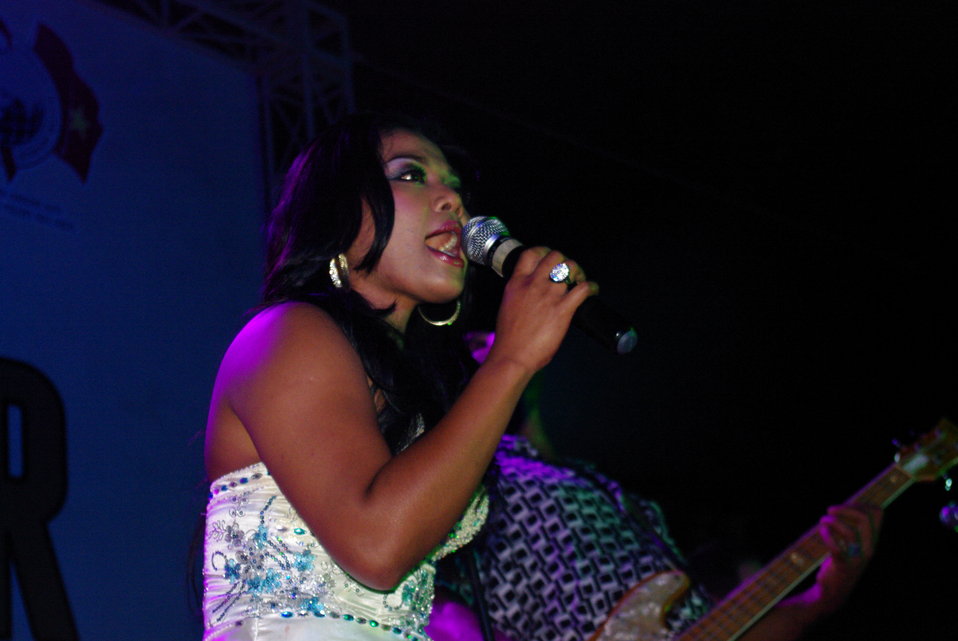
PEPFAR, U.S. Embassy Host Dengue Fever Concert in Hanoi